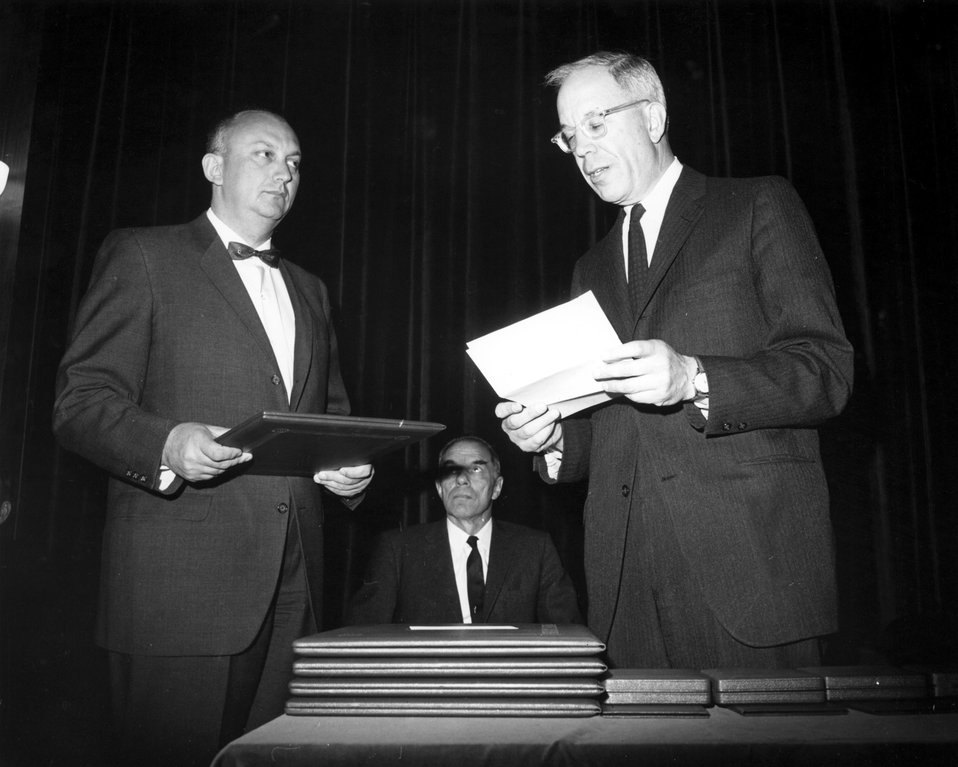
Dr. Benedict, GAC and Dr. Tobias. ERNEST O. LAWRENCE AWARD - 1963. National Academy of Sciences, April 25, 1963.